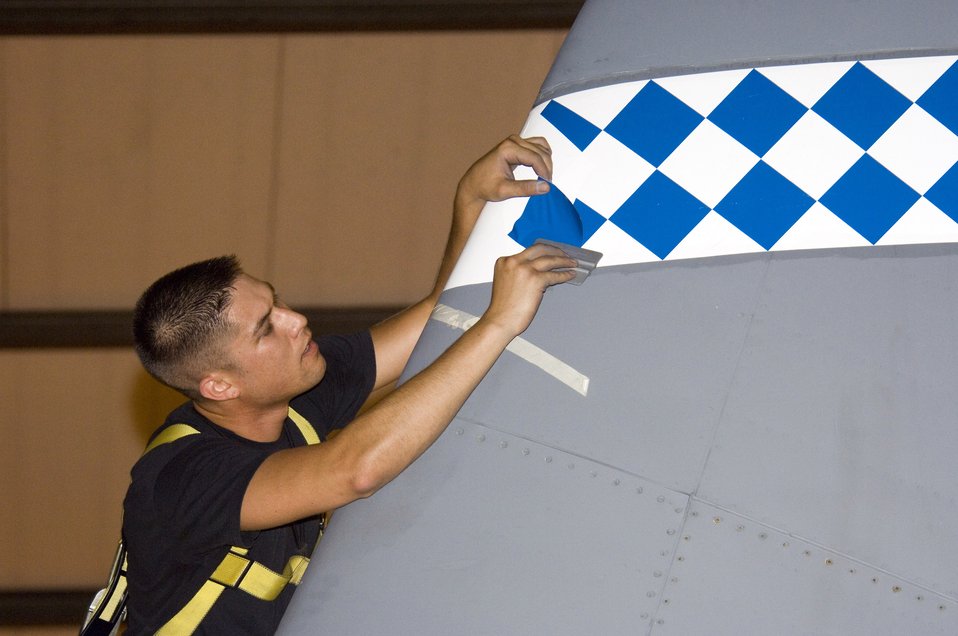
Telltale signs

Staff Sgt. James Cole puts the mark of the